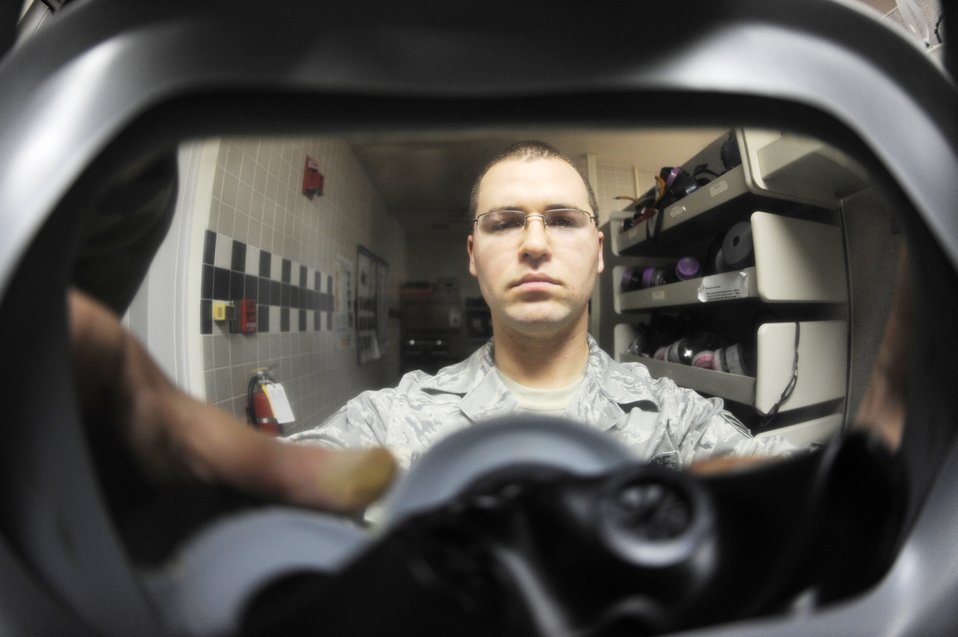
Can you breathe?

Senior Airman Jimmy VanHuss, 5th Medical Group bioenvironmental engineering flight technician, performs a gas mask fit test Nov. 12, 2009, at Minot Air Force Base, N.D.